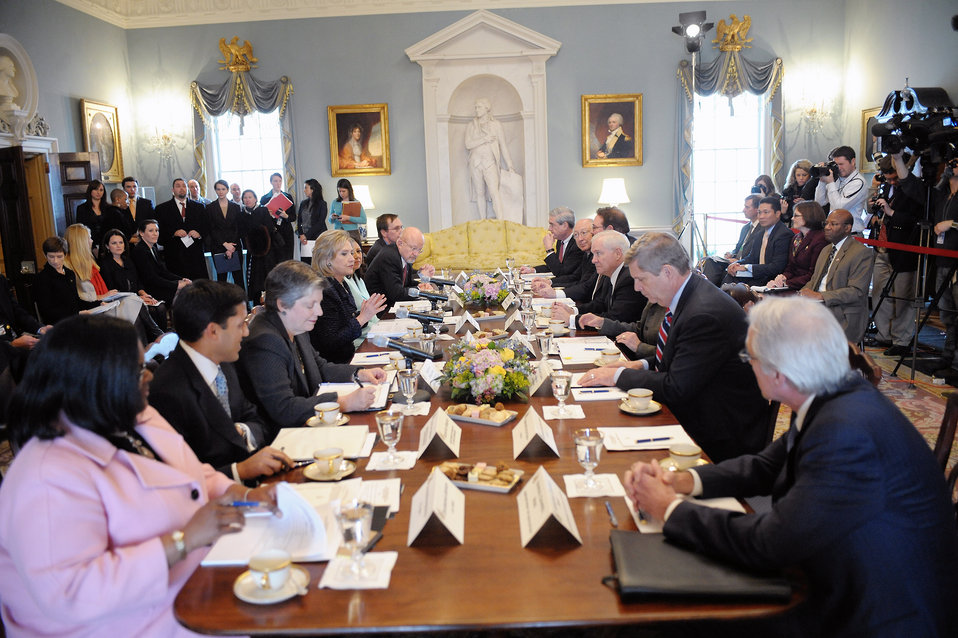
Secretary Clinton Chairs the Annual Meeting of the President's Interagency Task Force To Monitor and Combat Trafficking in Persons

U.S. Secretary of State Hillary Rodham Clinton chairs the annual meeting of the President's Interagency Task Force To Monitor and Combat Trafficking in Persons with U.S. Secretary of Labor Hilda L. Solis, U.S. Attorney General Eric H. Holder, Jr., U.S. Secretary of Homeland Security Janet Napolitano, U.S. Under Secretary of State for Democracy and Global Affairs Maria Otero, and U.S. Ambassador-at-Large Luis CdeBaca, at the U.S. Department of State in Washington, D.C., on February 1, 2011.